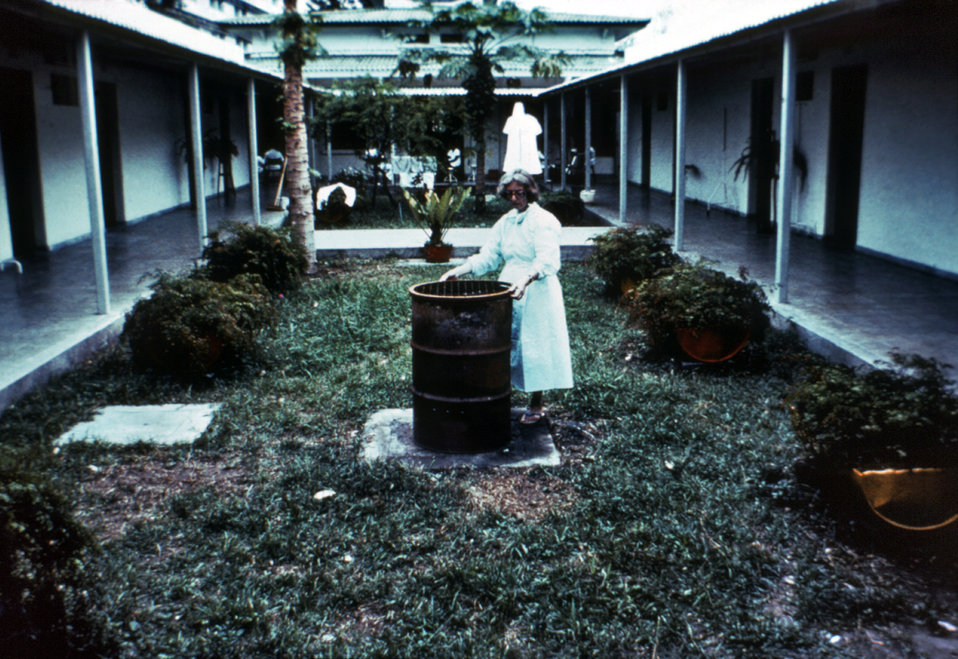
This was Margaret Issacson, M.D., shown in a courtyard within the Ngaliema Hospital in Kinshasa, Zaire as she stood next to an incinerator, which was used to burn containment materials during the country's Ebola outbreak of 1976.